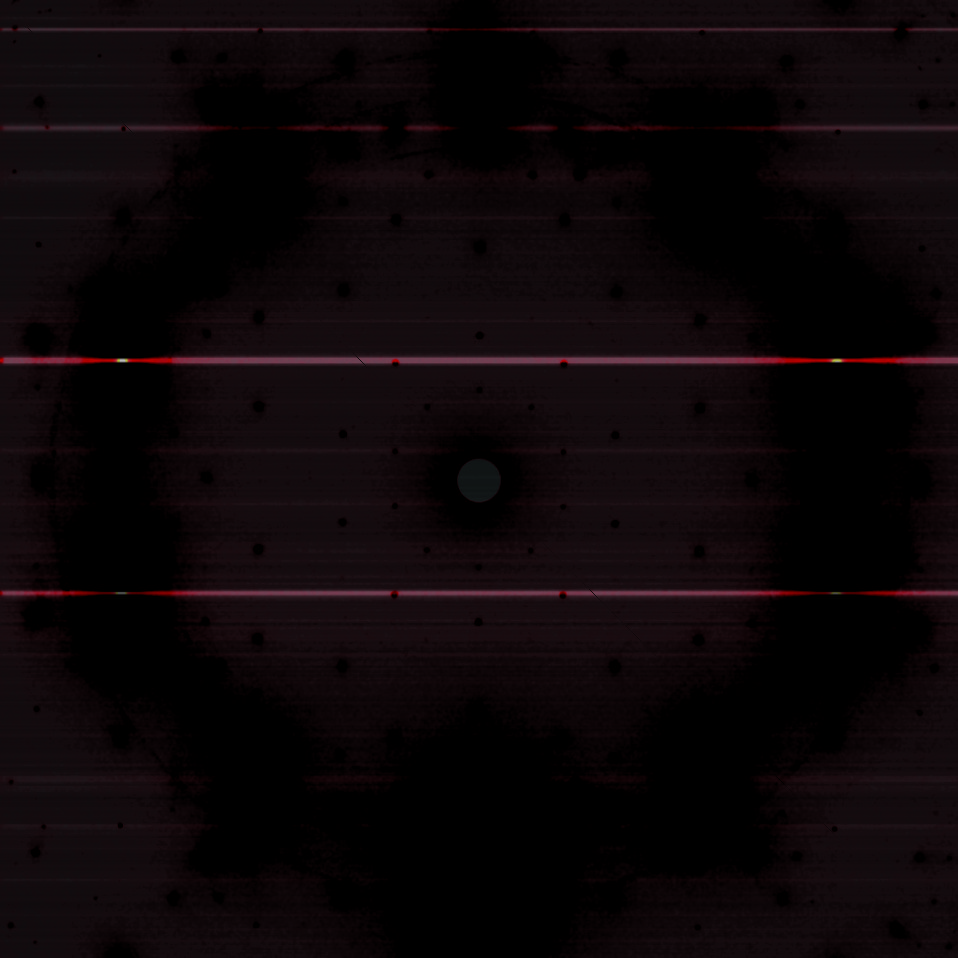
X-ray diffraction pattern of a scandium-zinc quasicrystal captured by Ames Lab Physicist Alan Goldman that shows five-fold symmetry.